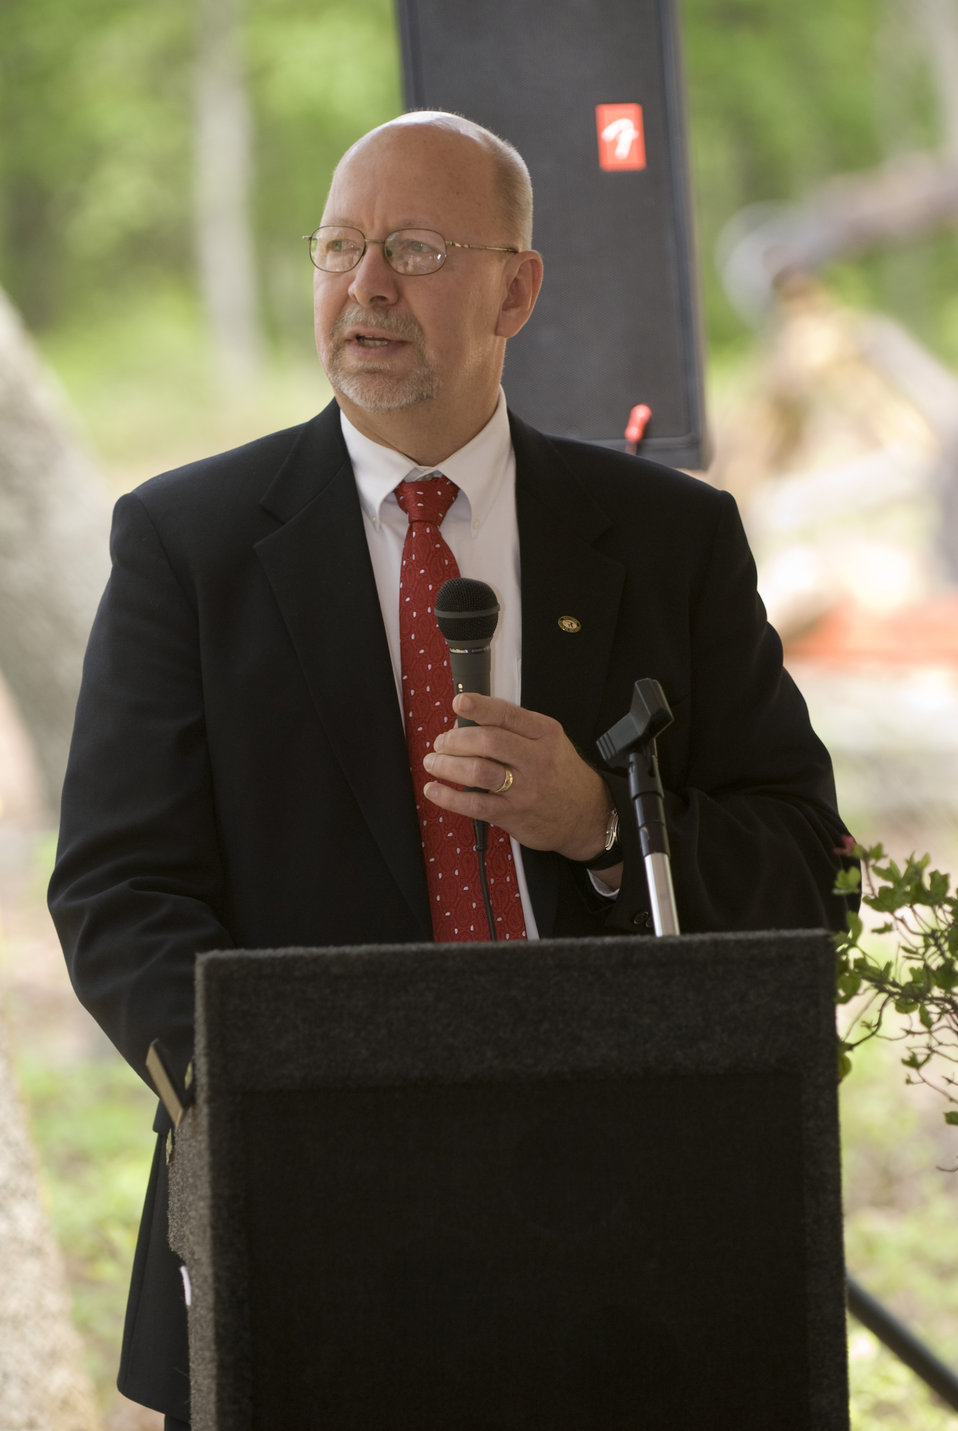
Ken Grannemann, representing the National Wildlife Refuge System